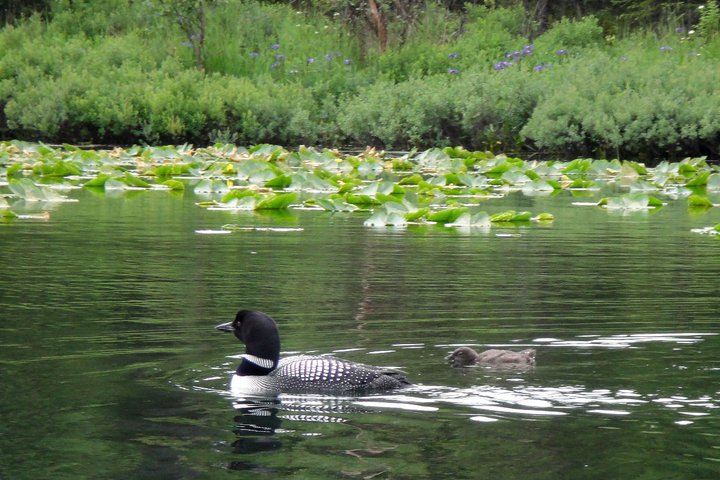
common loon and chick, Kenai National Wildlife Refuge, AK

Photo: Matthew Strausser, USFWS
2011 Wilderness Fellow